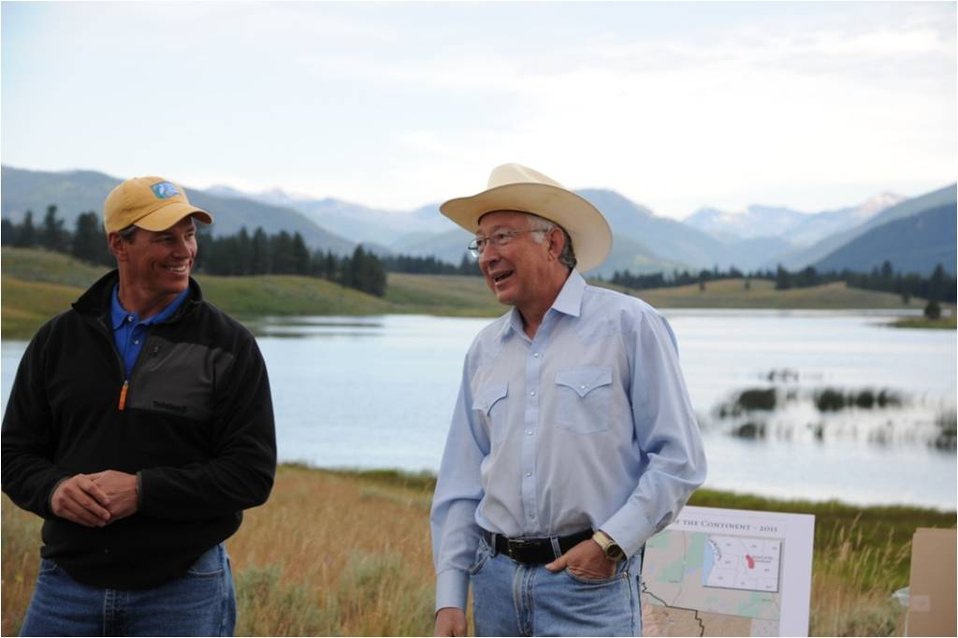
2011 Recovery Champion Greg Neudecker

U.S. Fish & Wildlife Service employee Greg Neudecker (left), a recipient of a 2011 Recovery Champion Award, and Secretary of the Interior Ken Salazar (right) share a moment with Montana's Crown of the Continent ecosystem in the background.

Greg Neudecker, Assistant State Coordinator for the Service’s Montana Partners for Fish and Wildlife Program received a Recovery Champion Award for his tireless dedication to finding win-win conservation solutions in Montana's Blackfoot Valley, Swan Valley, and Rocky Mountain Front. His efforts have resulted in impressive habitat restoration and protection to benefit some of the state's iconic native species including grizzly bear, bull trout, gray wolf, wolverine and lynx.

The Recovery Champion Awards honor Service staff members and their partners-in-mission for conserving endangered and threatened species of fish, wildlife, and plants. Service employees and partners, including federal and state conservation agencies, tribes, universities, conservation organizations, private landowners, and zoos and botanic gardens, are making a difference by designing and implementing activities to help listed species get to the point at which they are secure in the wild and no longer need Federal protection.

For information about the 2011 recovery champions, please visit the U.S. Fish and Wildlife Service’s Recovery Champion website at www.fws.gov/endangered/what-we-do/recovery-champions/inde....